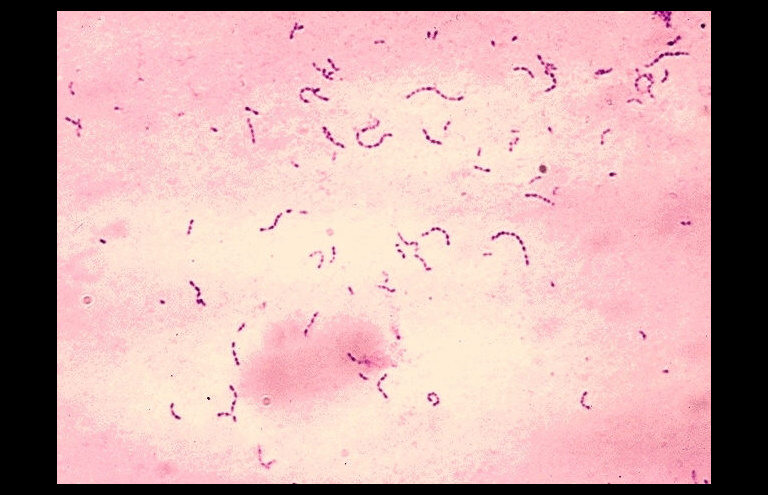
Streptococcus mutans. Gram stain.